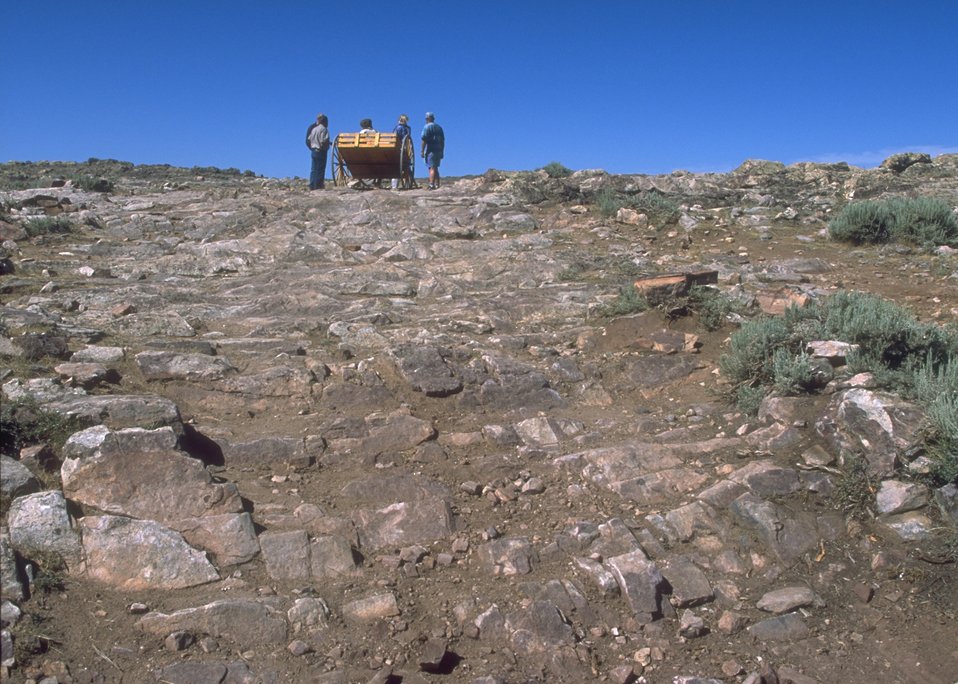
Hand cart re-enactment along the Mormon Trail, Lander Field Office.